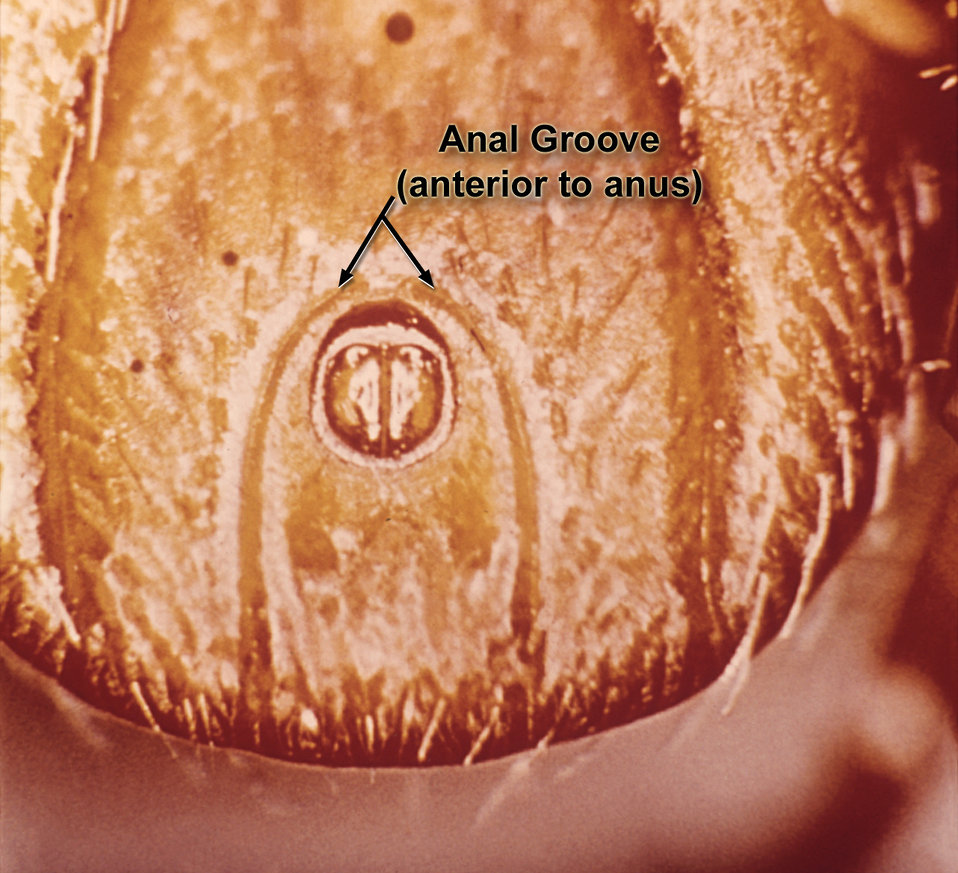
The position of the anal groove on this tick's abdomen places it anterior and lateral to the anal orifice.